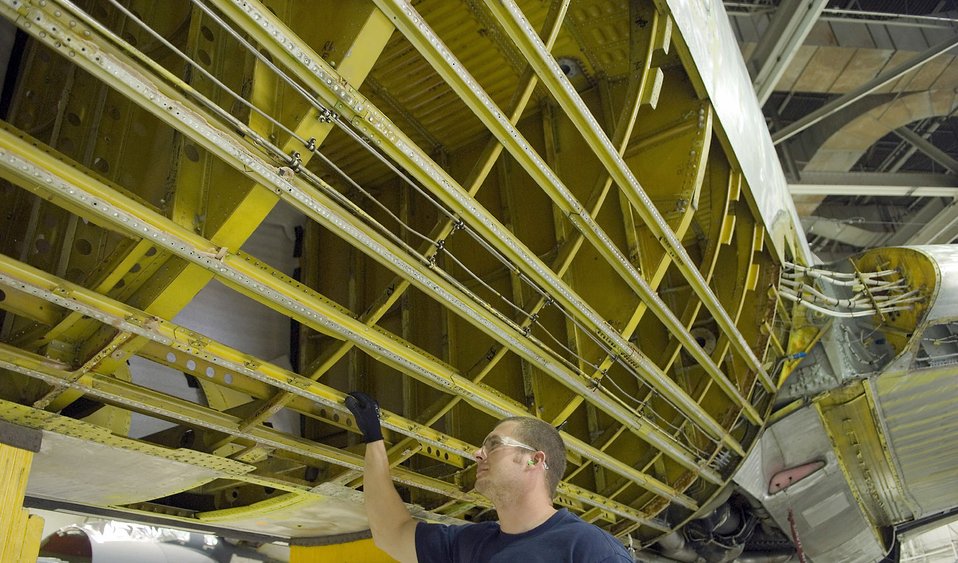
KC-135 Stratotanker

Sheet metal technician Doug Mascho inspects the inside rib cage of an aging KC-135R Stratotanker that sits inside the Oklahoma Air Logistics Center, Okla., stripped of its side panel while being prepared for full maintenance overhaul May 14.